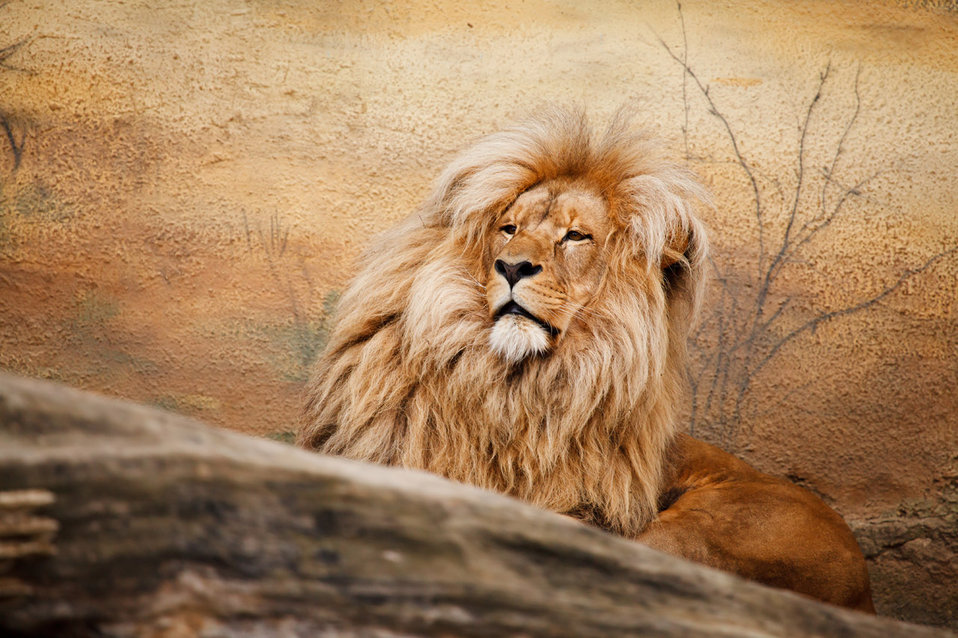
Male lion

Lion looking at something.